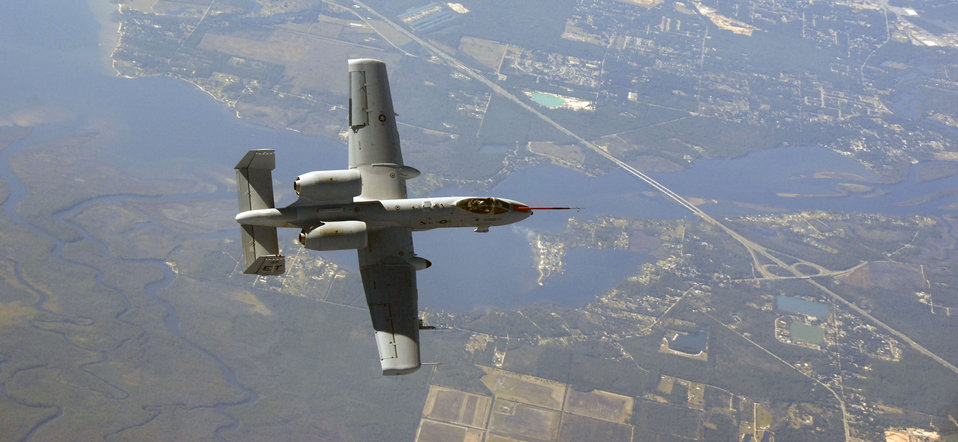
The

Maj. Matthew Domsalla flies his A-10C Thunderbolt II back to Eglin Air Force Base, Fla., Nov. 5 after successfully completing an historic ordnance delivery test mission. Major Domsalla made the first ever release of a Laser Joint Direct Attack Munition from an A-10, moving this weapon capability for the A-10 closer to fielding for warfighters. Major Domsalla is with the 40th Flight Test Squadron at Eglin AFB.